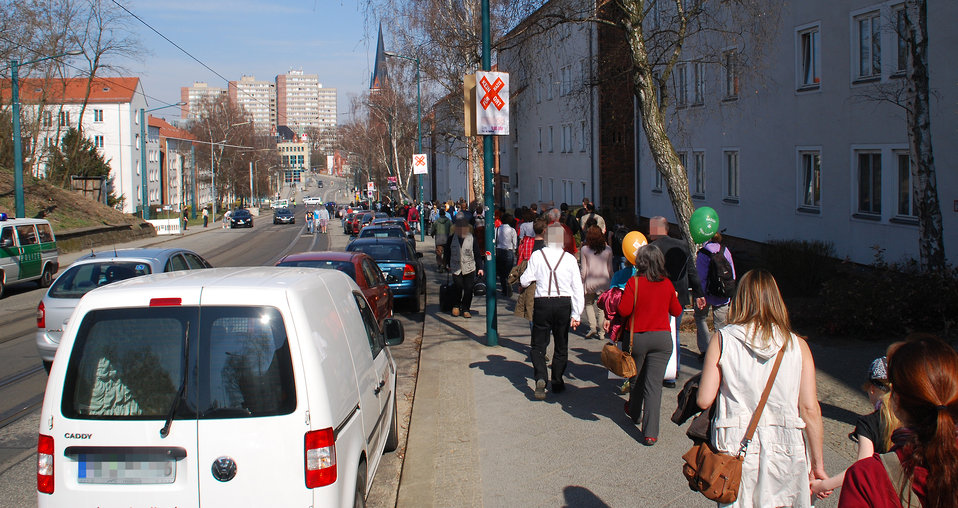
Proteste gegen den Nazi-Aufmarsch am 24.3.2012 in Frankfurt (Oder)